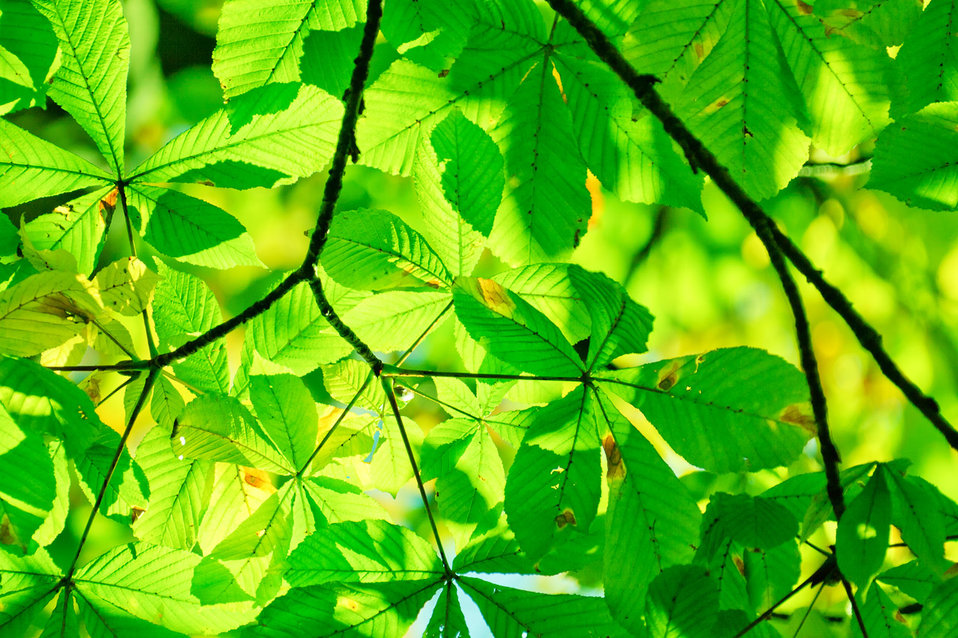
Backlit leaves

Green backlit leaves background photo.